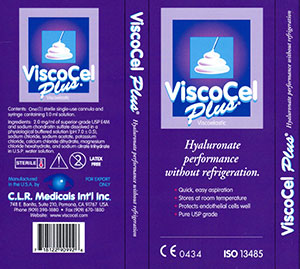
RECALLED – Viscocel and Viscocel Plus

November 25, 2013 – Product Recall –CLR Medicals International Inc. Issues Nationwide Recall of Viscoelastic Products.